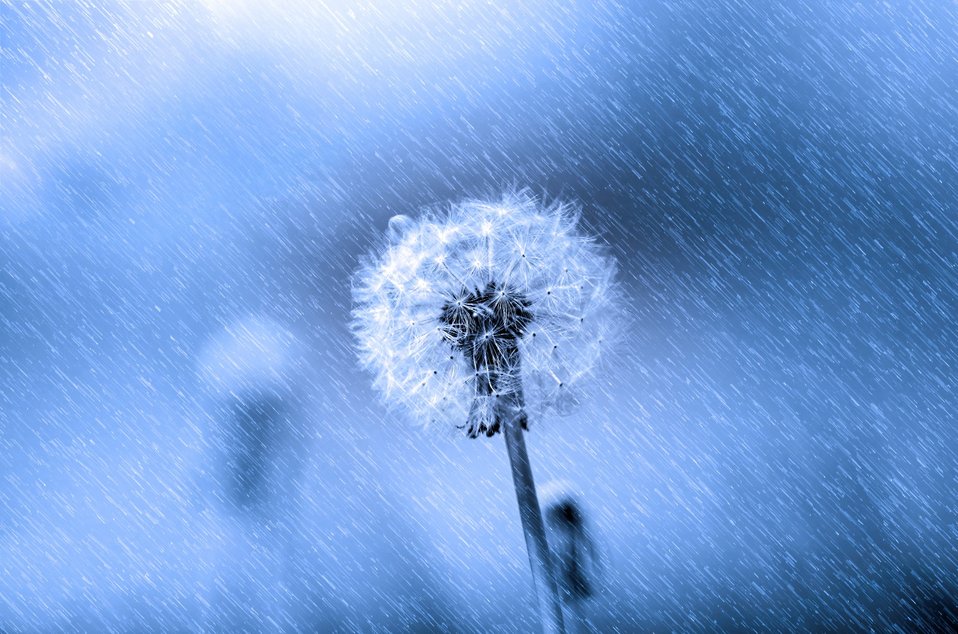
Dandelion in the rain - weather.